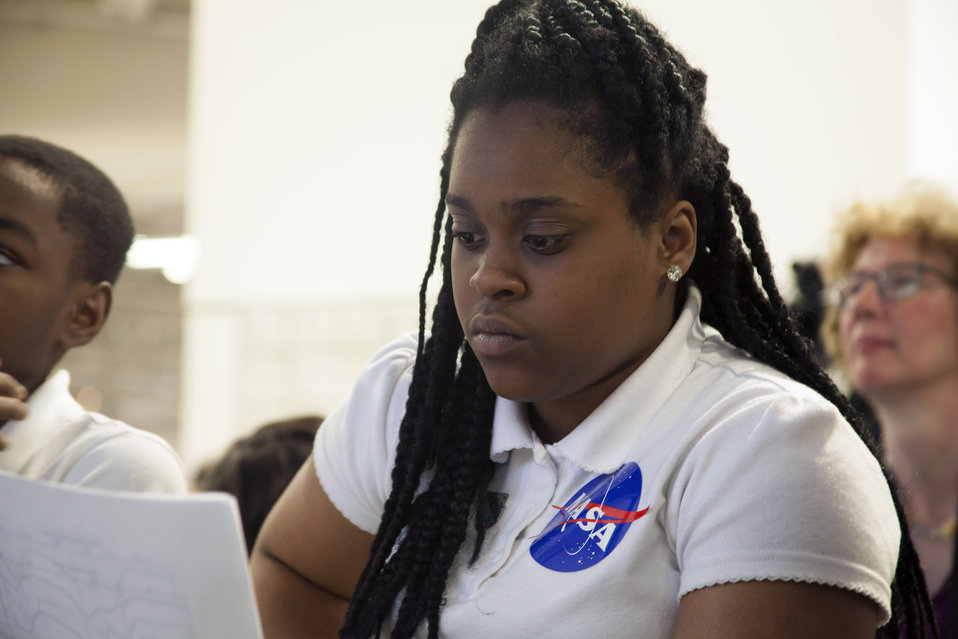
Middle School Students Participate in a Virtual Field Trip to Mars

Kramer Middle School students participate in a virtual field trip to Mars through a Google Hangout with NASA subject matter experts and the U.S. Department of State at the USA Science and Engineering Festival (USASEF) in celebration of National Science Week in Washington, D.C., on April 25, 2014.